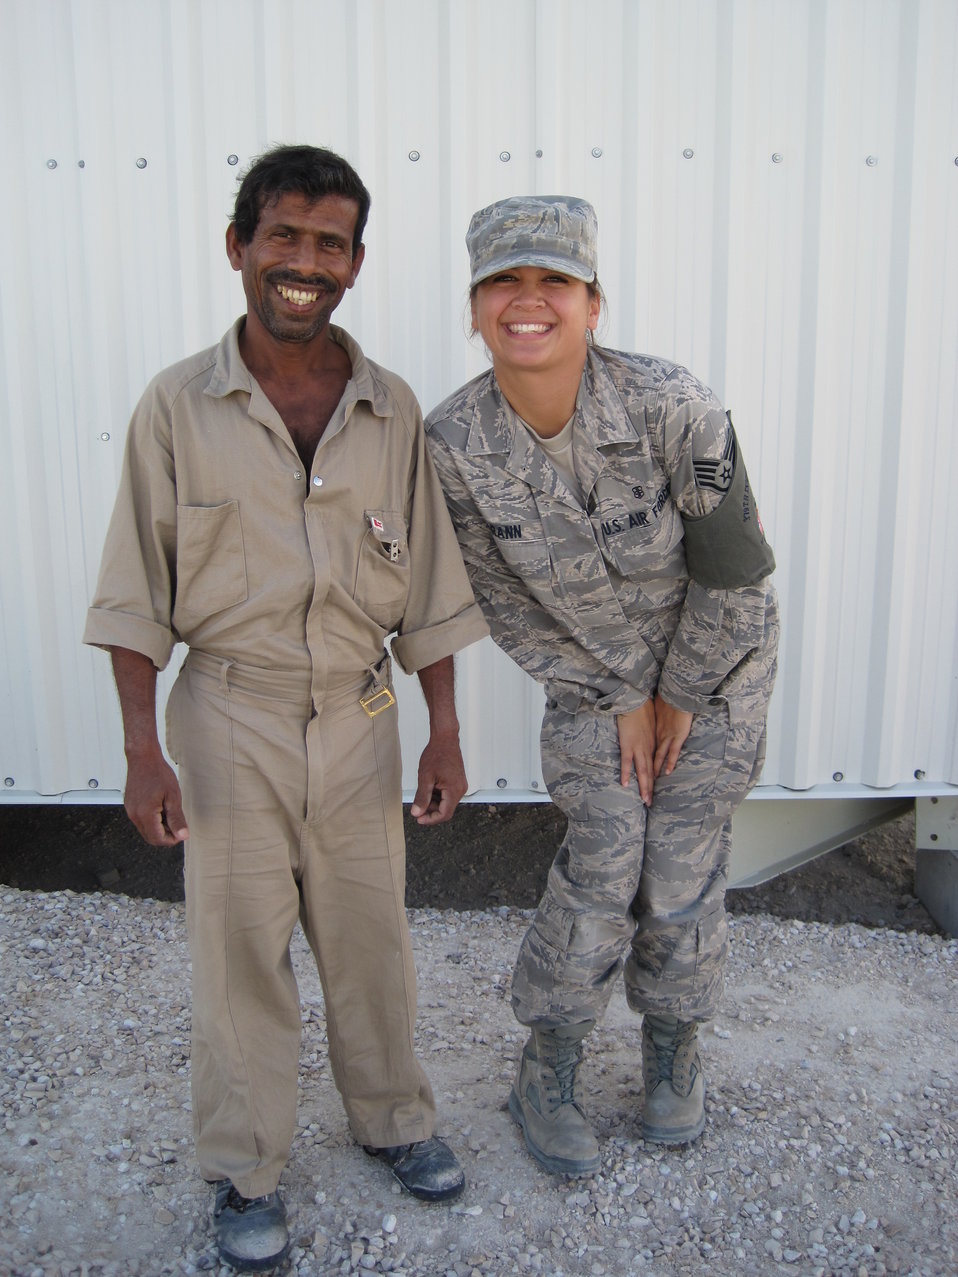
Through TCN duty

Staff Sgt. Rebecca Brann smiles for a photo with a third country national worker during her deployment to Qatar, in 2011. TCNs help with the construction of buildings and provide a variety of other services at deployed locations. Brann is a dental assistant with the 6th Dental Squadron at MacDill Air Force Base, Fla.